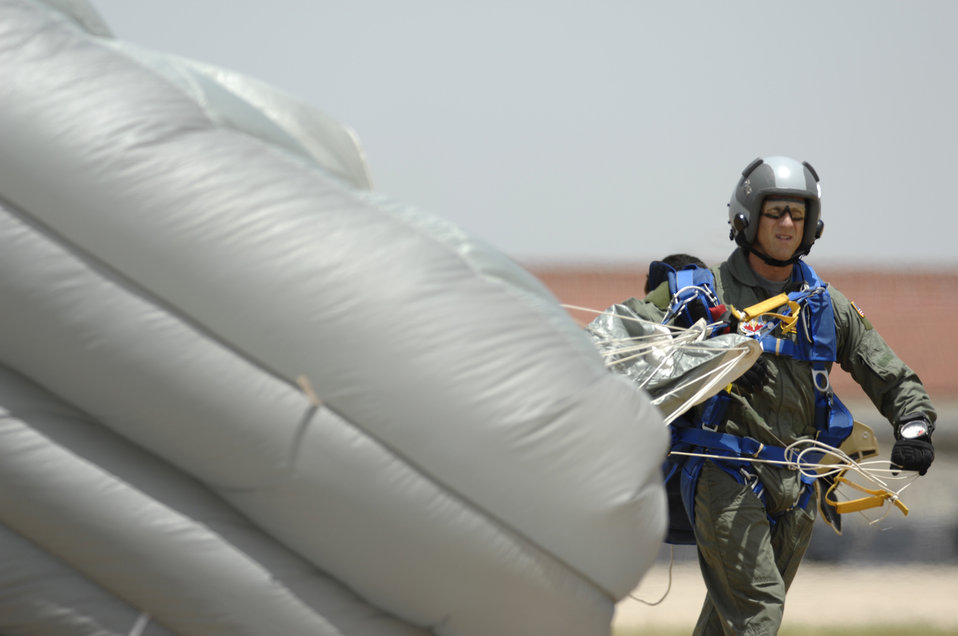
Jump training at Lackland

Capt. Tony Alexander gathers his parachute after jumping out of a Marine C-130 Hercules July 23 over Lackland Air Force Base, Texas. Captain Alexander is attached to the 342nd Training Squadron at Lackland AFB. Airmen from the 342nd along with SERE specialists, Marines, Soldiers and an exchange officer from the Royal Air Force conducted competency airborne training. Aircrew and aircraft are from the Marine Aerial Refueler Transport Squadron 234 at Joint Reserve Base/Naval Station Fort Worth, Texas.